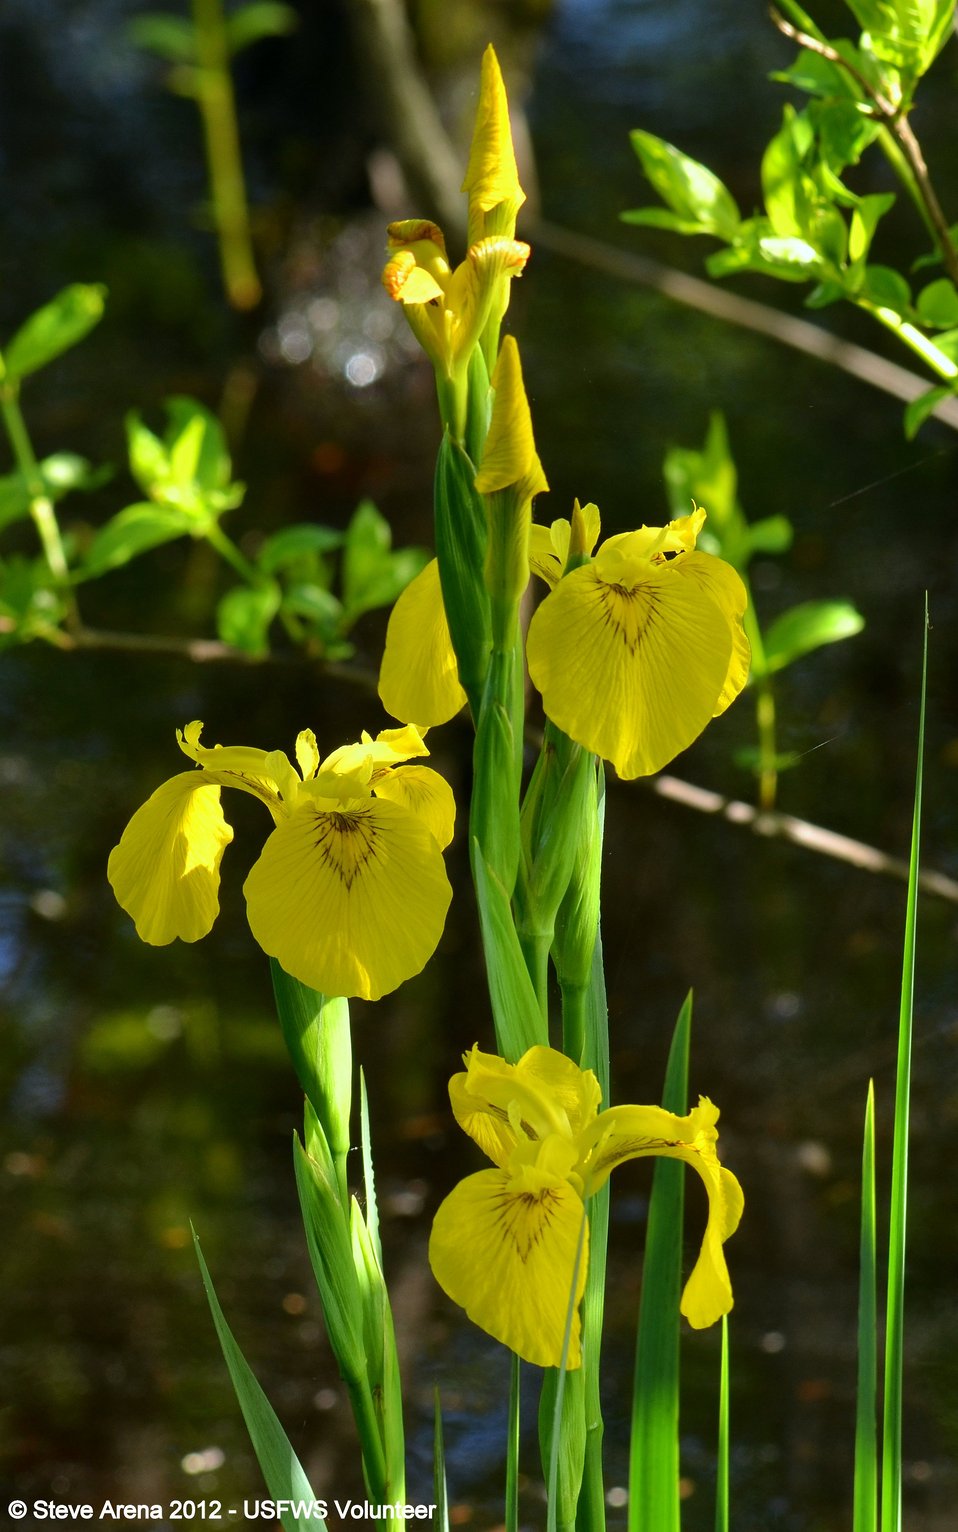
Yellow Flag (Iris pseudacorus) Great Meadows NWR, Concord, MA

Yellow Flag Great Meadows NWR, Concord, MA

Credit: Steve Arena/USFWS

18 May 2012